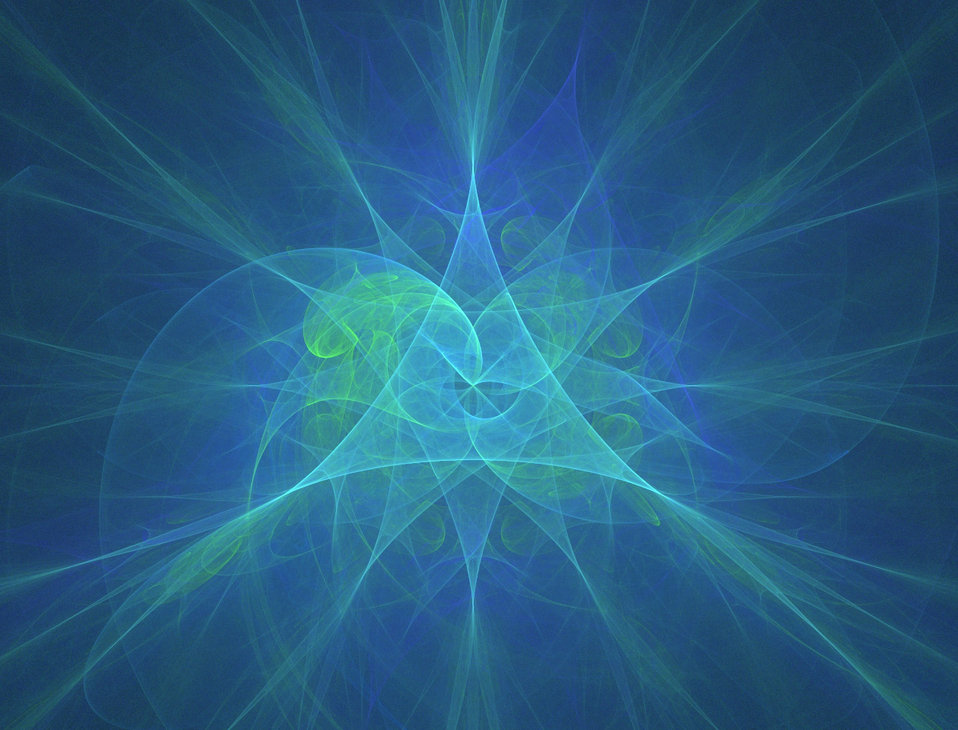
Blue and green

A fractal image in blue and green.